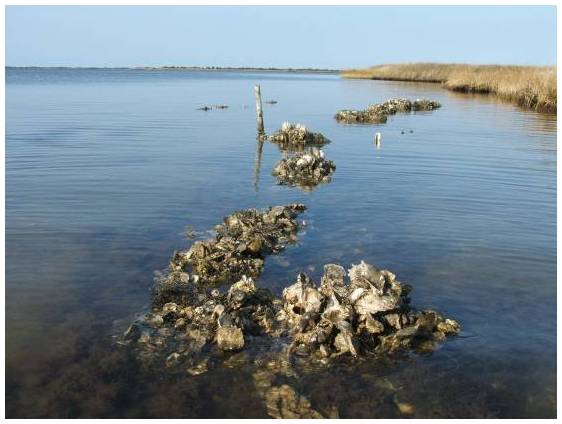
Oyster reefs

Artificial oyster reefs parallel to the shoreline is a natural way to slow the rate of erosion by catching the wave energy.